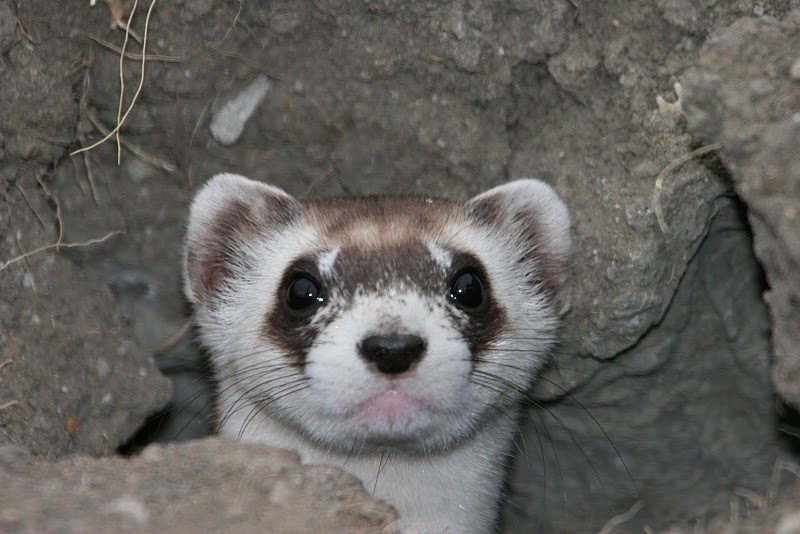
Black-footed Ferret